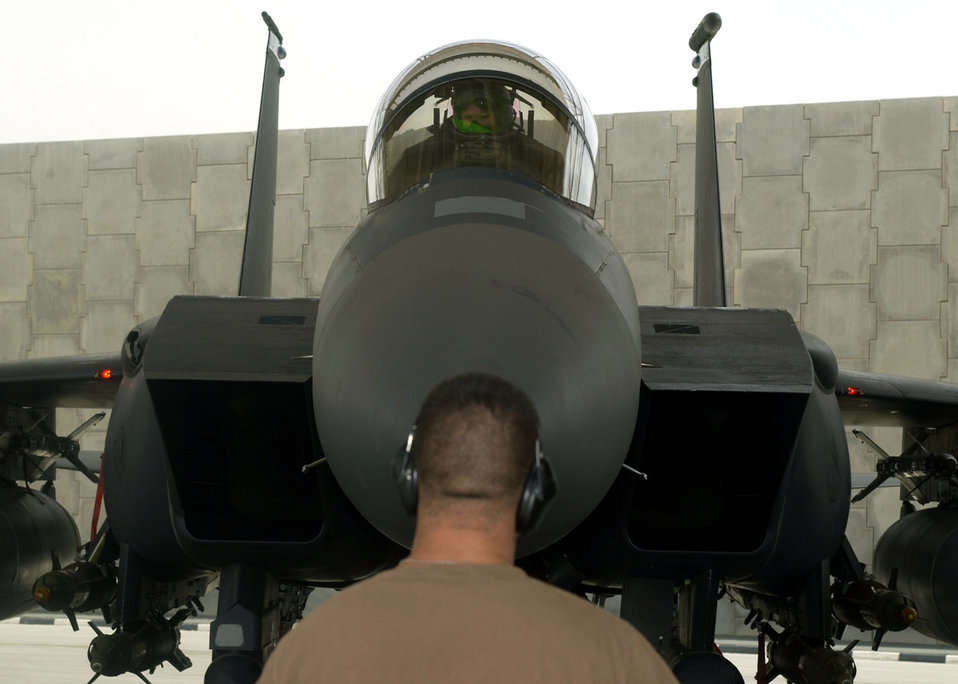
Preparing to strike

SOUTHWEST ASIA -- Staff Sgt. Robert Gunter marshals an F-15E Strike Eagle at a forward-deployed location. Sergeant Gunter is assigned to the 379th Air Expeditionary Wing and is deployed from Royal Air Force Lakenheath, England.